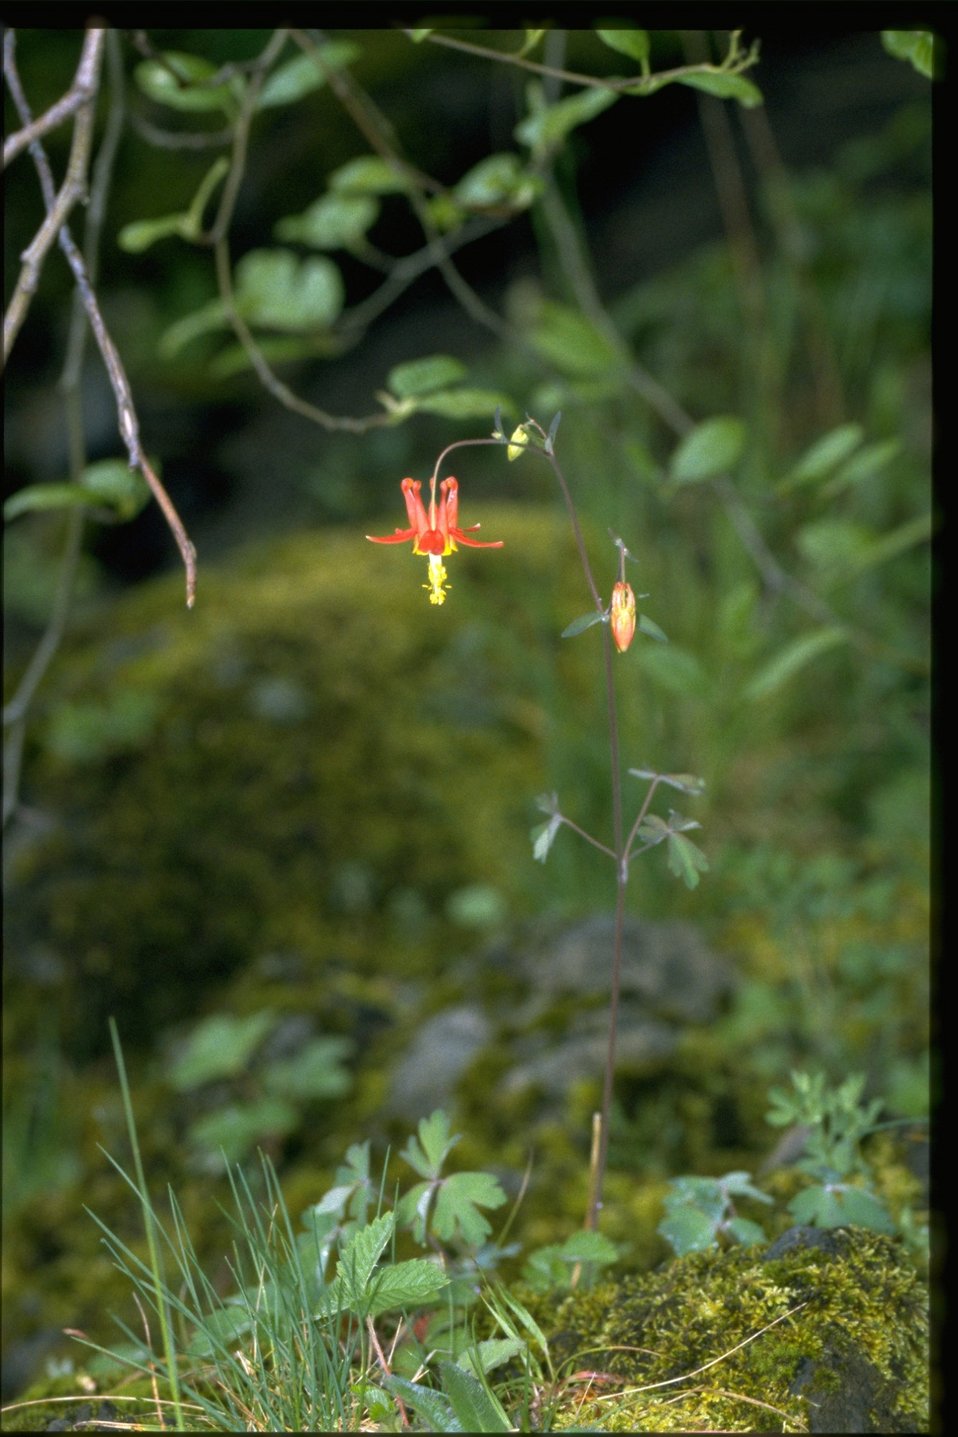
Farshot of Aquillegia formosa.